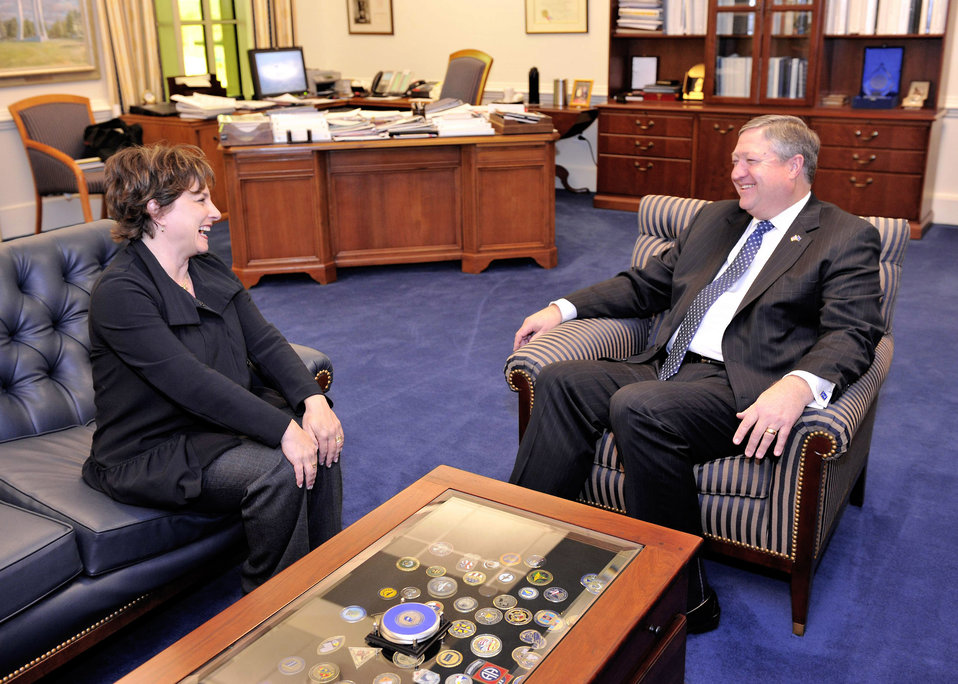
Secretary Donley announces location of newest Fisher House

Secretary of the Air Force Michael Donley meets with Nancy Berglass in his office prior to a ceremony to presenting her the Zachary and Elizabeth Fisher Distinguished Civilian Humanitarian Award at the Pentagon's Hall of Heroes Jan. 28, 2010. The multidepartmental award was established in 1996 and is presented to those exemplifying personal qualities of patriotism, generosity, and selfless dedication to improving the quality of life of members of the armed forces of the United States.